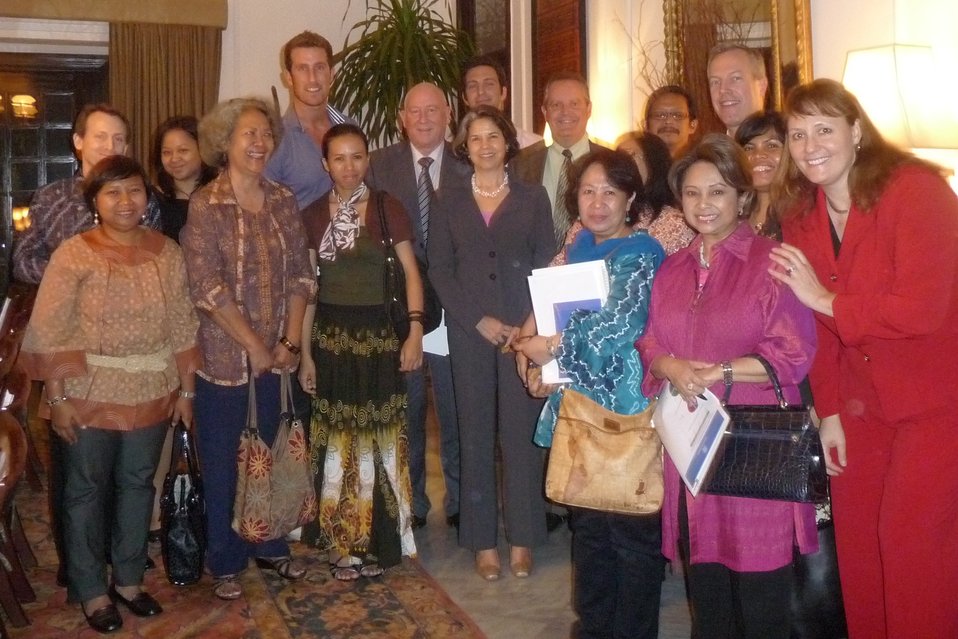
Under Secretary Otero in Indonesia

Under Secretary for Democracy and Global Affairs Maria Otero meets with local inhabitants and NGO representatives in Pekanbaru, Indonesia, May 19, 2010.